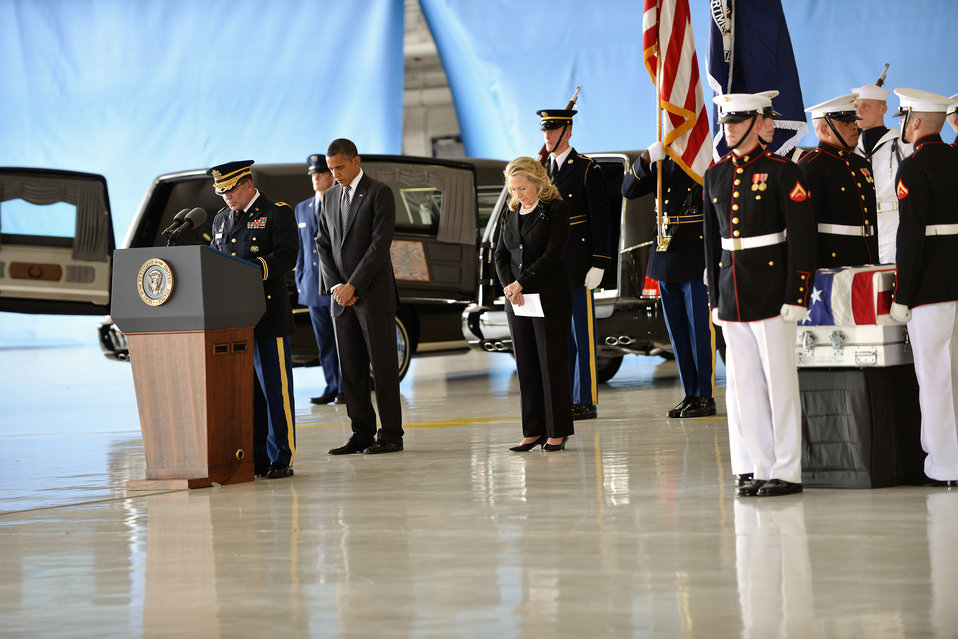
President Obama and Secretary Clinton at the Transfer of Remains Ceremony to Honor Those Lost in Attacks in Libya

President Barack Obama and U.S. Secretary of State Hillary Clinton honor the Benghazi victims at the Transfer of Remains Ceremony held at Andrews Air Force Base, Joint Base Andrews, Maryland, September 14, 2012. An attack on the U.S. diplomatic mission in Benghazi, Libya claimed the lives of Ambassador J. Christopher Stevens, Information Management Officer Sean Smith, and security personnel Tyrone S. Woods and Glen A. Doherty on September 11, 2012.